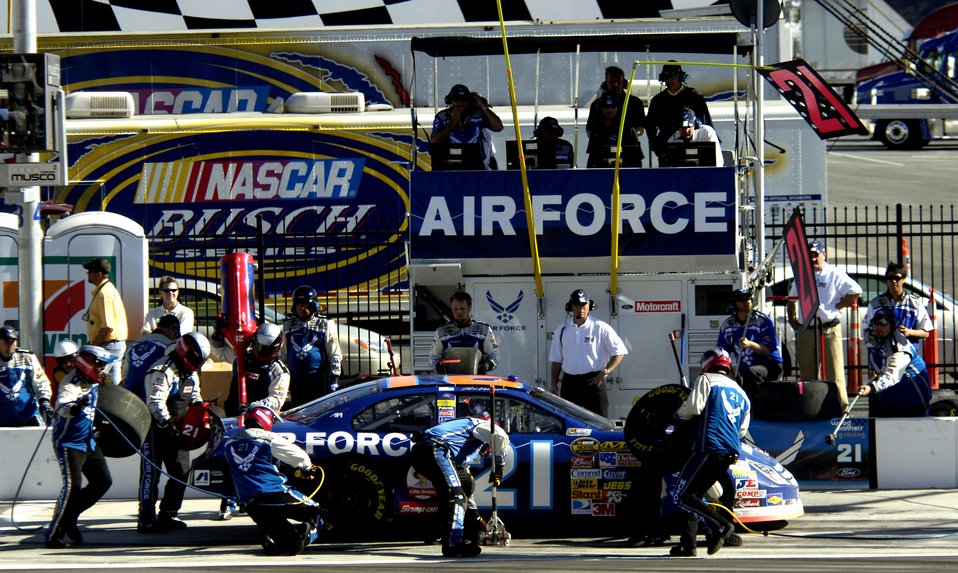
NASCAR Nextel Cup UAW Daimler-Chrysler

Crew members from the Air Force #21 car, driven by Jon Wood, finish a time critical pit stop March 11 at Las Vegas Motor Speedway during the NASCAR Nextel Cup UAW Daimler-Chrysler 400.